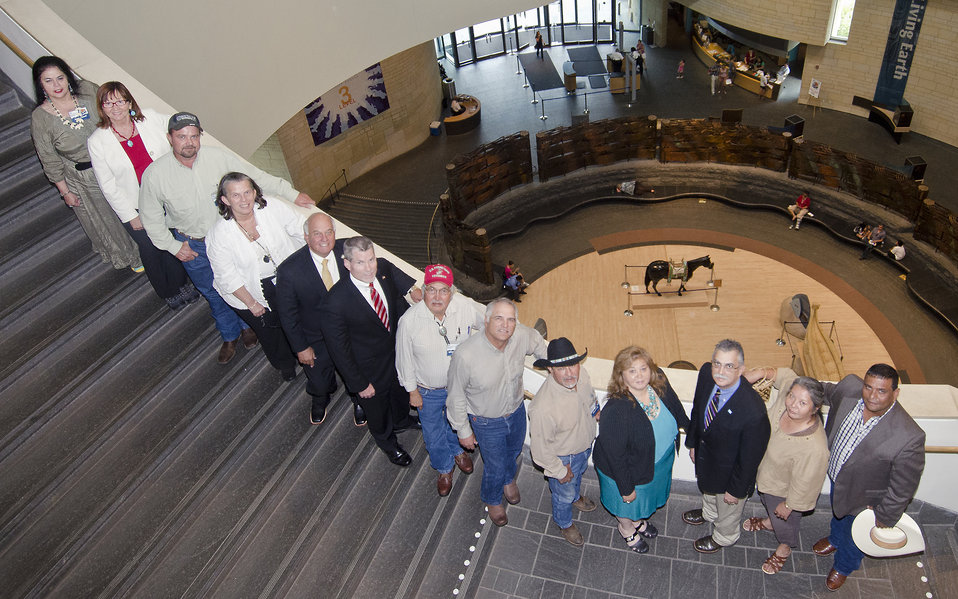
Members of the U.S. Department of Agriculture’s (USDA) Council for Native American Farming and Ranching (CNAFR) pose on the stairwell at the National Museum of the American Indian in Washington, D.C. on Wednesday, Aug. 15, 2012. CNAFR was created to advise the Secretary on ways to eliminate barriers to participation for Native American Farmers and Ranchers in USDA programs. The Council was established as part of the Keepseagle settlement, and is conducted under the oversight of USDA's Office of Tribal Relations under the Office of the Secretary of Agriculture. (L to R Director Tribal Relations and Designated Federal Official (DFO) for the Council Joanna Mounce Stancil, Civil Rights Attorney and former Agricultural Commissioner for North Dakota in Bismarck, ND., Sarah Vogel, Farmer/Rancher of the Choctaw Nation in Soper, OK., Henry “Porter” Holder, U.S. Department of Agriculture (USDA) Senior Advisor to the Secretary for Tribal Relations Janie Simms Hipp, Chickasaw Nation, State Legislator and Farmer/Rancher of the Muscogee Nation in Warner, OK., Jerry McPeak, USDA Farm Service Agency (FSA) Deputy Administrator for Farm Loan Programs Chris Beyerhelm, Rancher of the Navaho Nation in Shiprock, NM., Gilbert Harrison, Natural Resources Director of the Blackfeet Nation in Cut Bank, MT., Gerald Lunak, Farmer/Rancher of the Soboba Band of Luiseno Indians in Banning, CA., Edward Soza, Natural Resources and Conservation official Native Village of Tyonek in Tyonek, AK., Angela Sandstol, USDA FSA Administrator Juan Garcia, Rancher/Farmer of the Eastern Band of Cherokee Indians in Cherokee, NC., Mary Thompson, and Natural Resources/Range Manager of the Shoshone-Bannock Tribes in Blackfoot, ID., Mark Wadsworth.